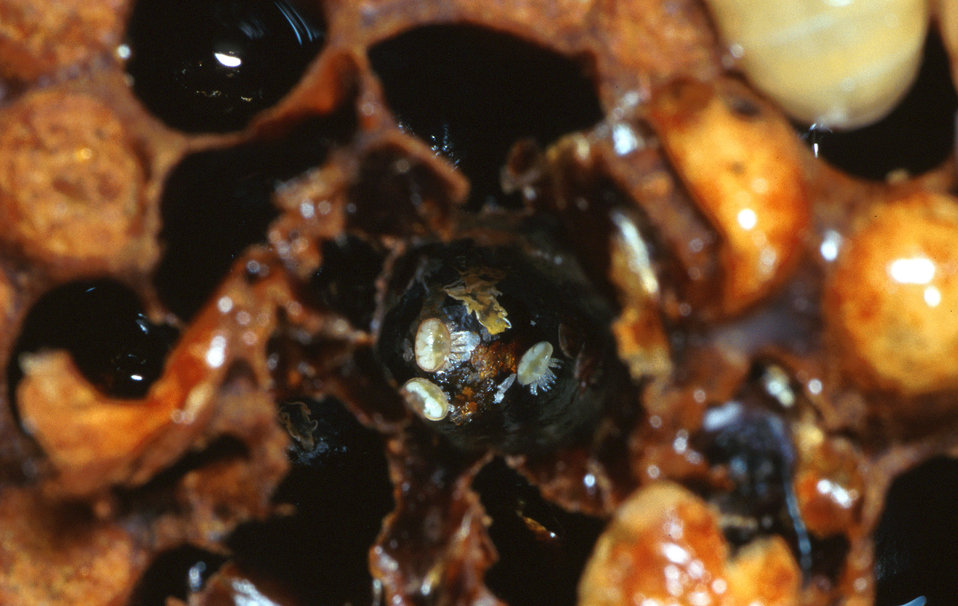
A family of varroa mites found at the bottom of a honey bee brood cell.